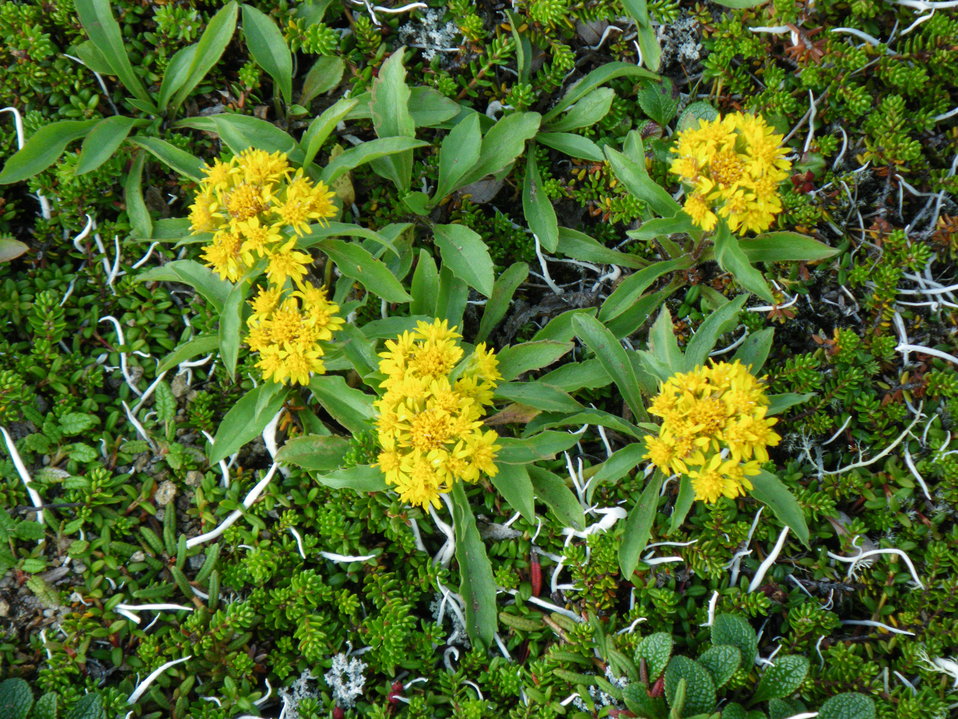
Goldenrod

Izembek National Wildlife Refuge